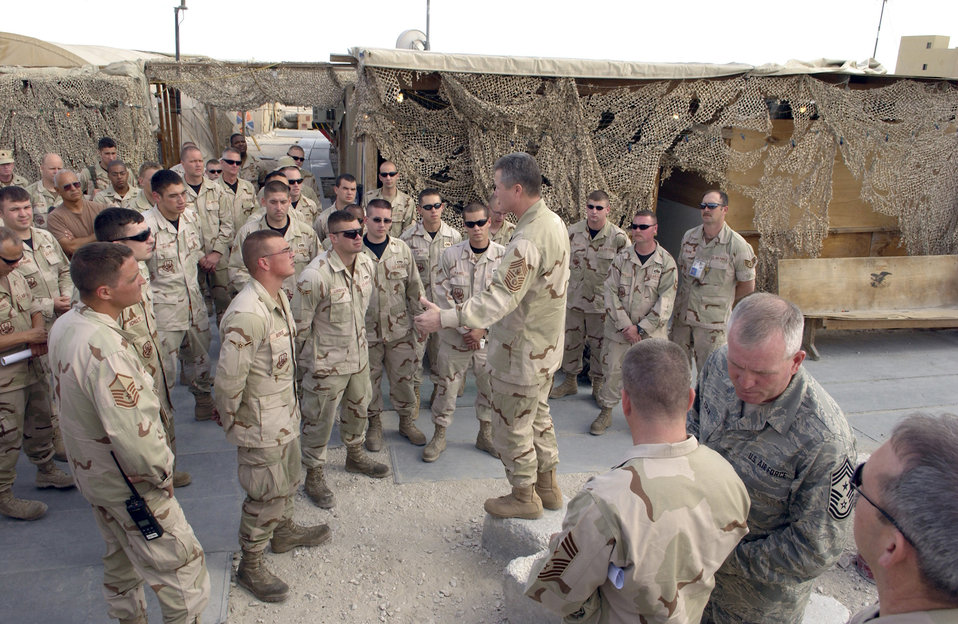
Top chief visits troops

SOUTHWEST ASIA (AFPN) -- Chief Master Sgt. of the Air Force Gerald R. Murray talks to Airmen with the 379th Air Expeditionary Wing, Jan. 3. He wanted to get their thoughts on the Air Force's future, its new uniforms and the